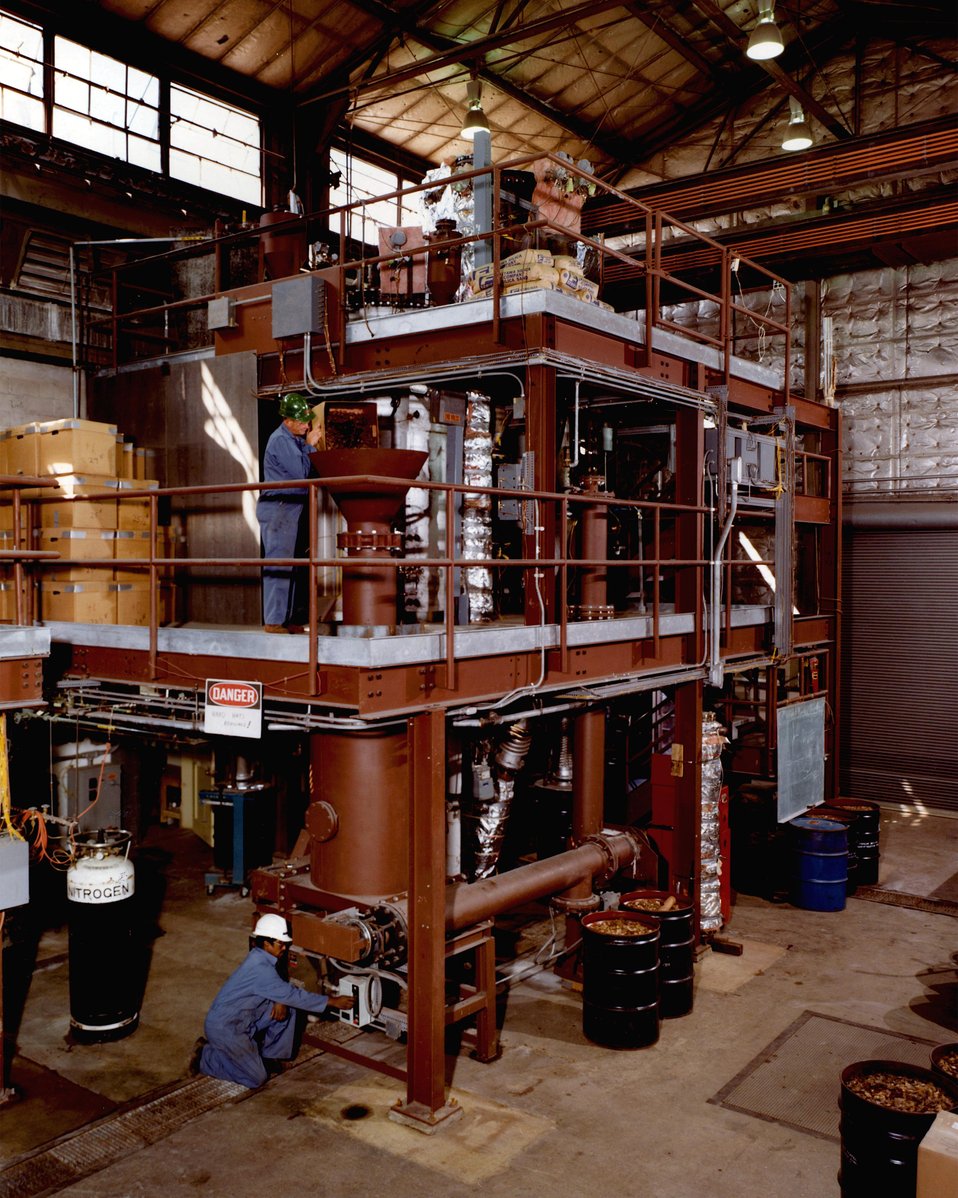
OVERALL VIEW OF THE UNIT WITH WOOD FEEDER (FOREGROUND), GASIFIER AND COMBUSTOR BEHIND THE FEEDER.

THE MULTI-SOLID FLUIDIZED-BED GASIFICATION TECHNOLOGY IS A METHOD OF CONVERTING BIOMASS, E.G., WOOD CHIPS, INTO METHANE-RICH GAS THAT COULD BE USED IN PLACE OF NATURAL GAS.THE METHOD USES A CHEMICAL CATALYST IN A REACTOR SYSTEM TO GASIFY BIOMASS. THIS REACTOR IS LESS COMPLEX IN DESIGN THAN A COAL GASIFICATION PROCESS AND ALLOWS THE USE OF SMALLER UNITS.